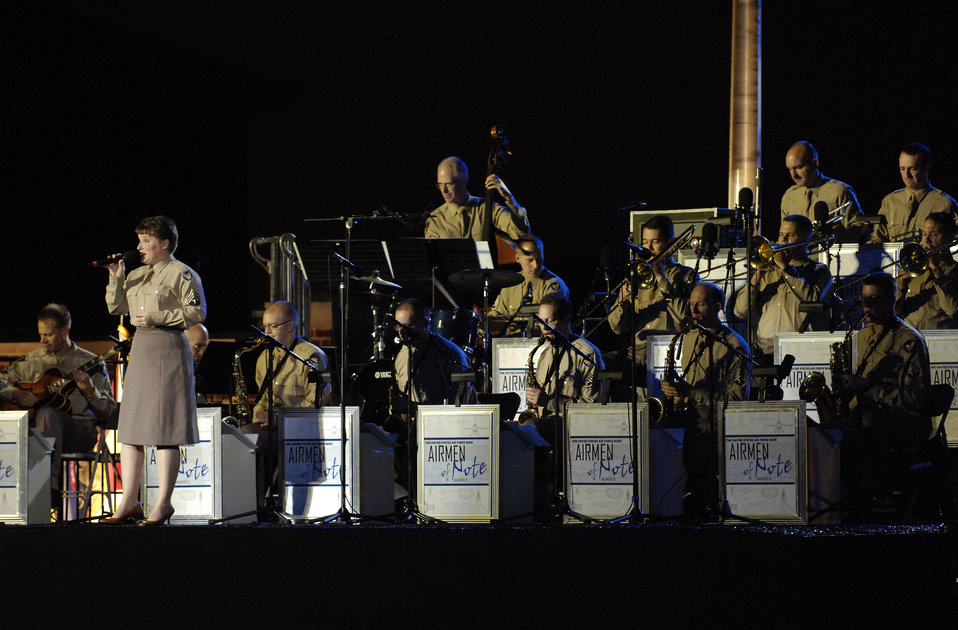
Air Force Tattoo

Members of the Air Force Band's Airmen of Note perform during the 2007 Air Force Tattoo Sept. 23 at Bolling Air Force Base, D.C. The 2007 Air Force Tattoo, titled